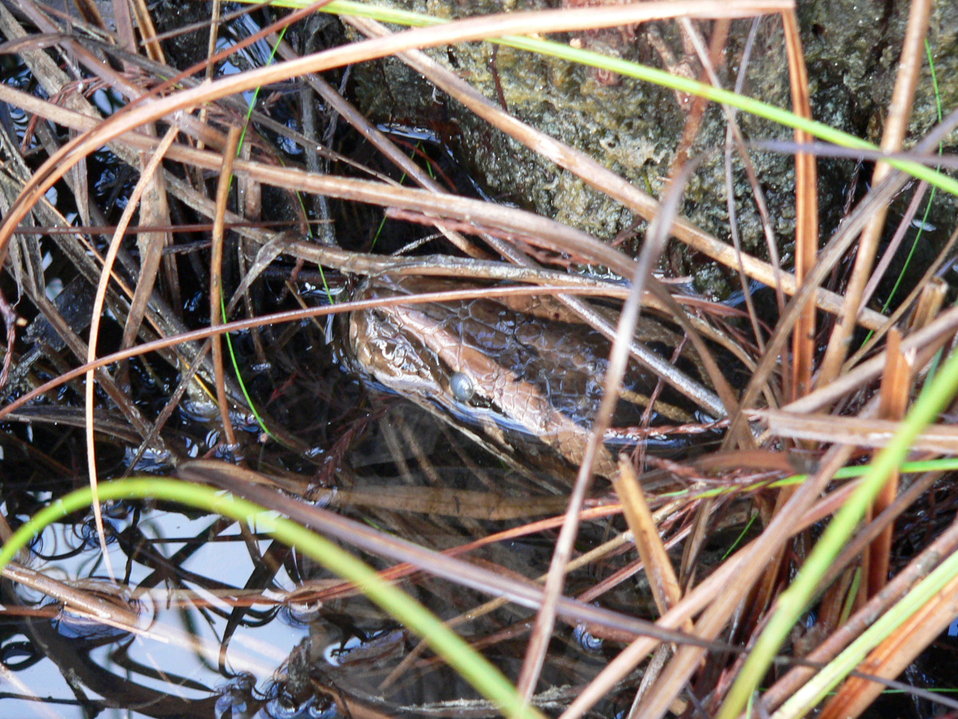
PYTHON BLOG closeup of python base of cypress tree NPS Lori Oberhofer

A Burmese python peeks out from its hiding place in Florida. U.S. Department of Agriculture (USDA) Animal and Plant Health Inspection Service (APHIS) Wildlife Services (WS)experts are developing new tools to help track and remove this invasive species.